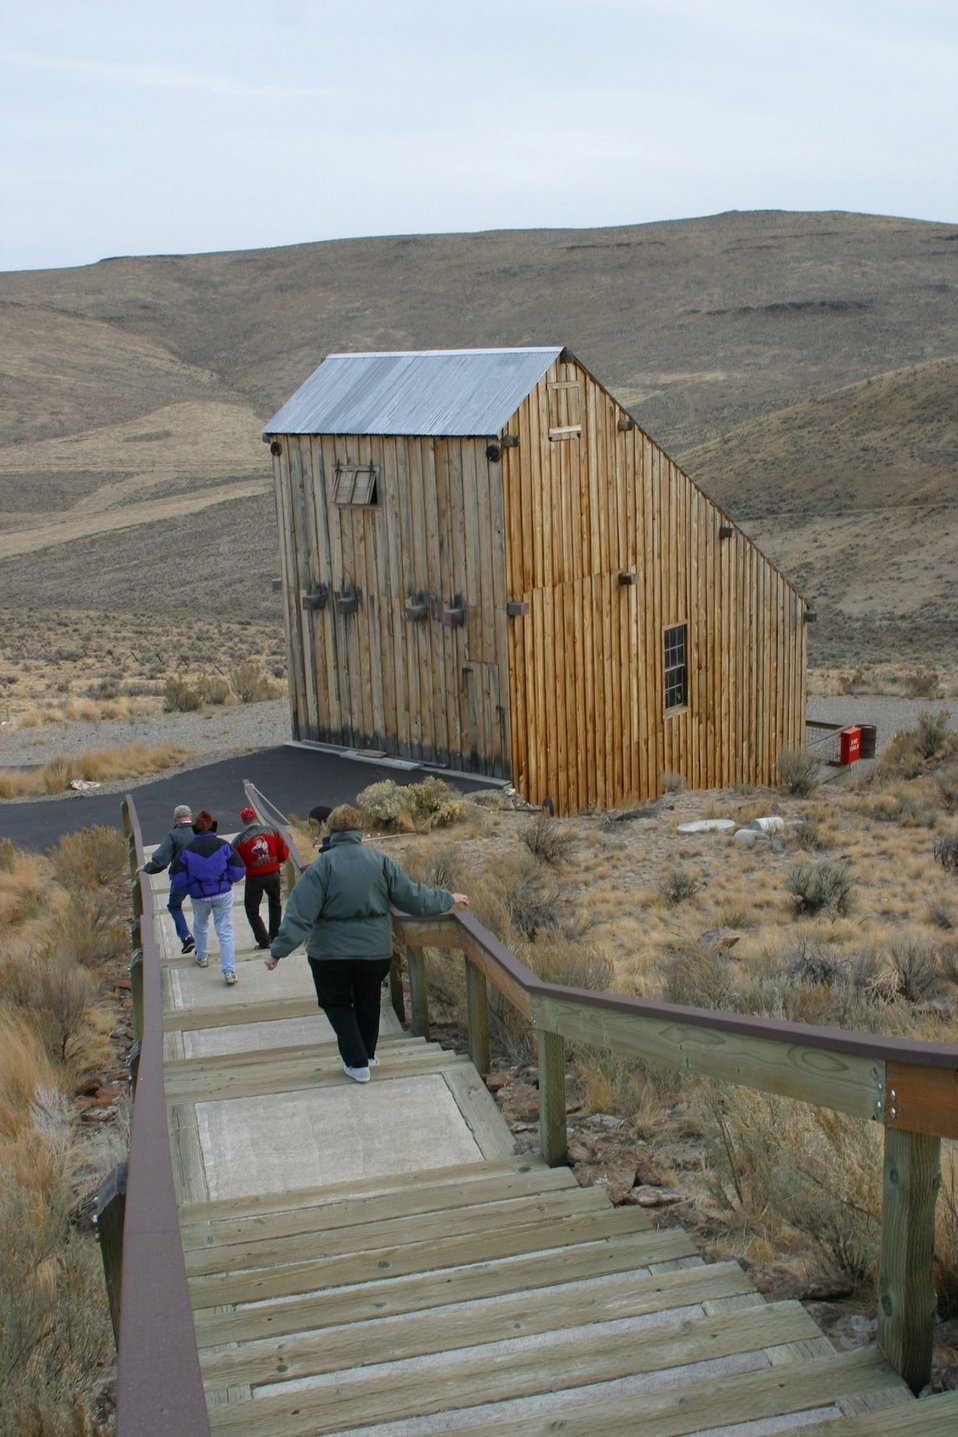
A replica of the Rabbit Mine 1926 stamp mill near Greenhorn in the Blue Mountains of eastern Oregon. It is used to interpret the importance of mining in western history, and the relationship of gold mining to the westward migration story.